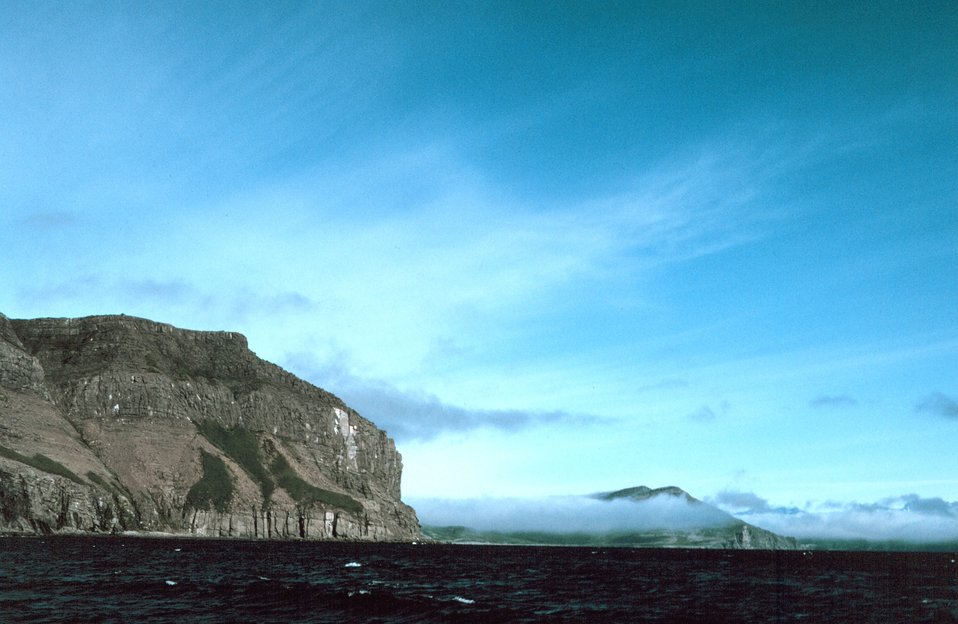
Majestic cliffs rise out of the sea at Puale Bay, called the windiest spot on the Alaskan coast.